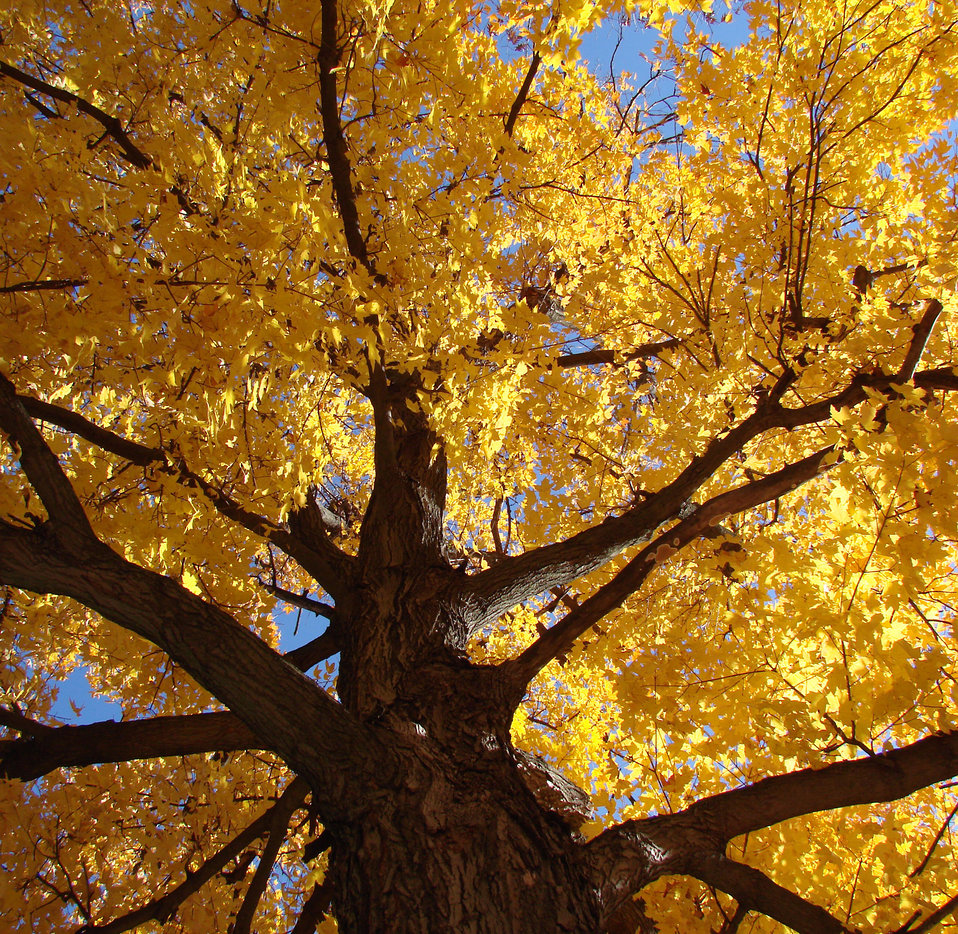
Looking up the tree 1

Looking up the tree from the ground at the beautiful golden leaves..